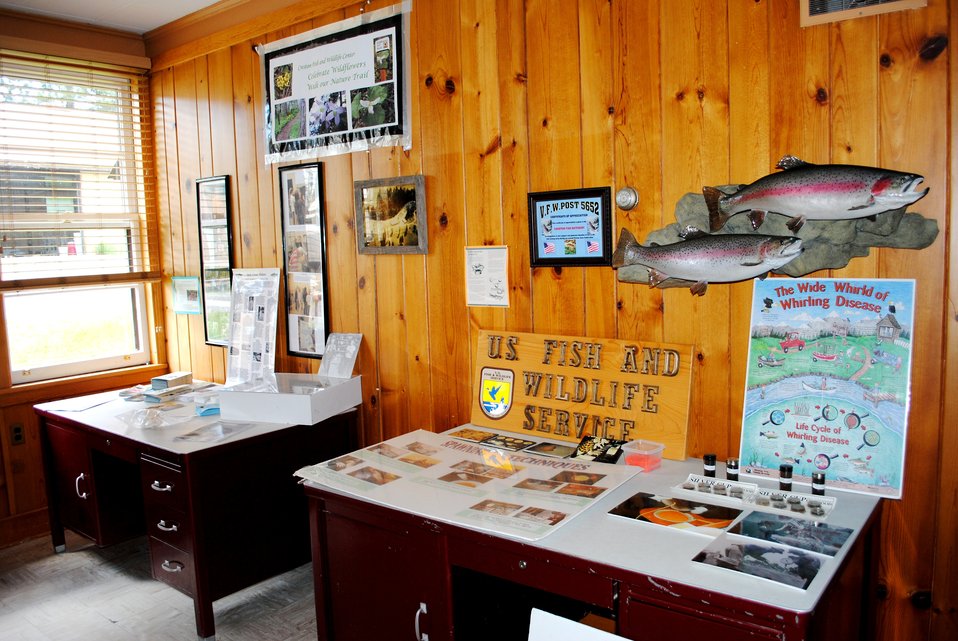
Creston National Fish Hatchery Visitor Center

Creston National Fish Hatchery provides many educational opportunities for area schools and families.
The hatchery now has a visitor center with a library for students and toddlers. There are many educational opportunities waiting for you at the Creston National Fish Hatchery.